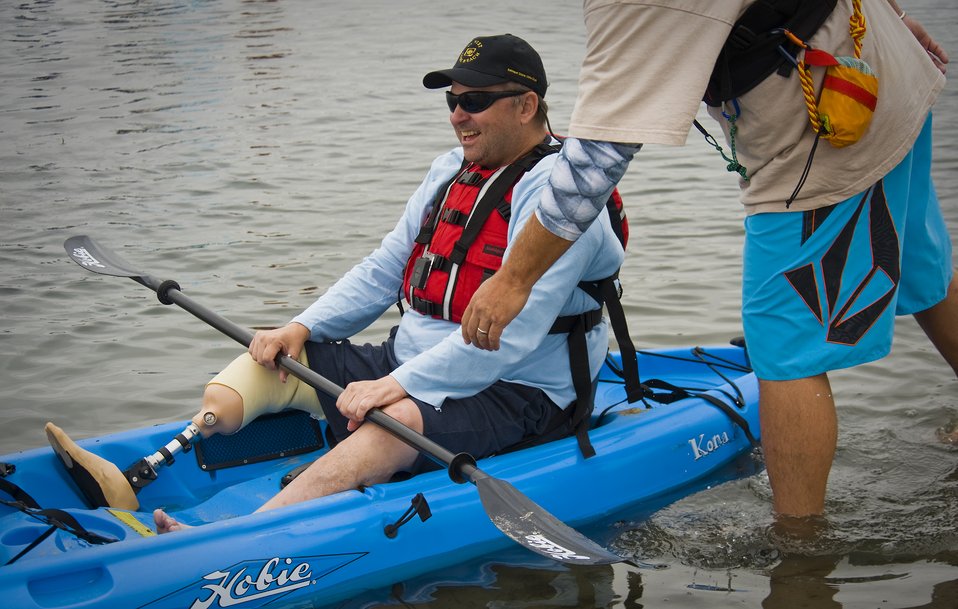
Veterans Summer Games Clinic

Richard Worlitz, a disabled U.S. Air Force veteran who served 1976-82, takes part in kayaking around Mission Bay, San Diego, Calif. Sept. 21 during the 2010 National Veterans Summer Sports Clinic. The sports clinic promotes rehabilitation by teaching summer sporting activities to veterans with significant physical or psychological impairments.